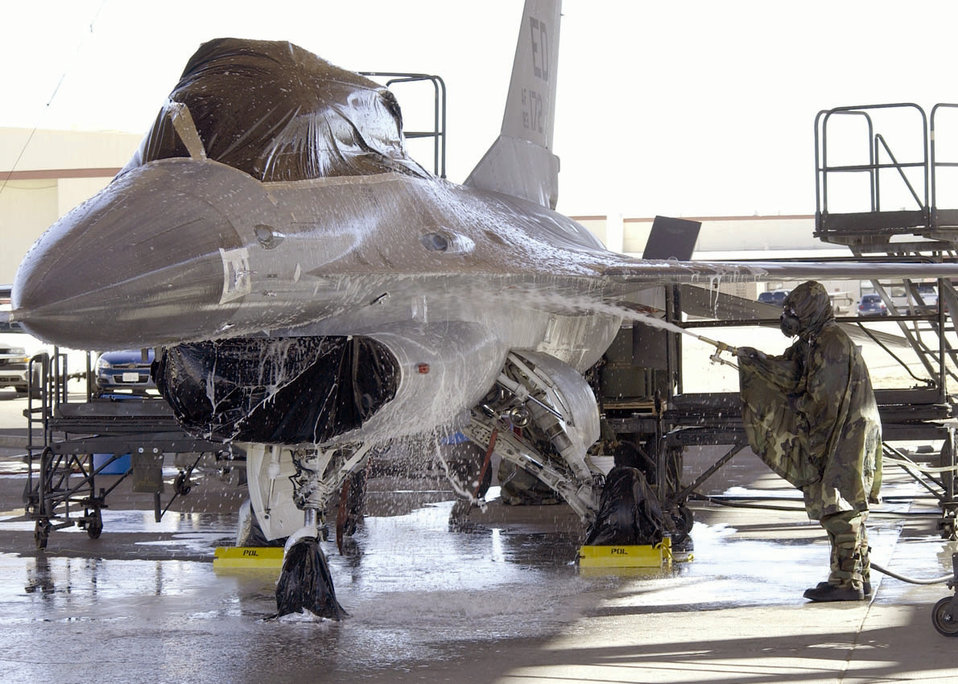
Team tests in-the-field decon procedures

EDWARDS AIR FORCE BASE, Calif. (AFPN) -- An Airman with the Joint Strike Fighter Integrated Test Force sprays down an F-16 Fighting Falcon before its final chemical decontamination test Jan. 30. The goal of the testing is to decontaminate an entire aircraft quickly and return it to service.